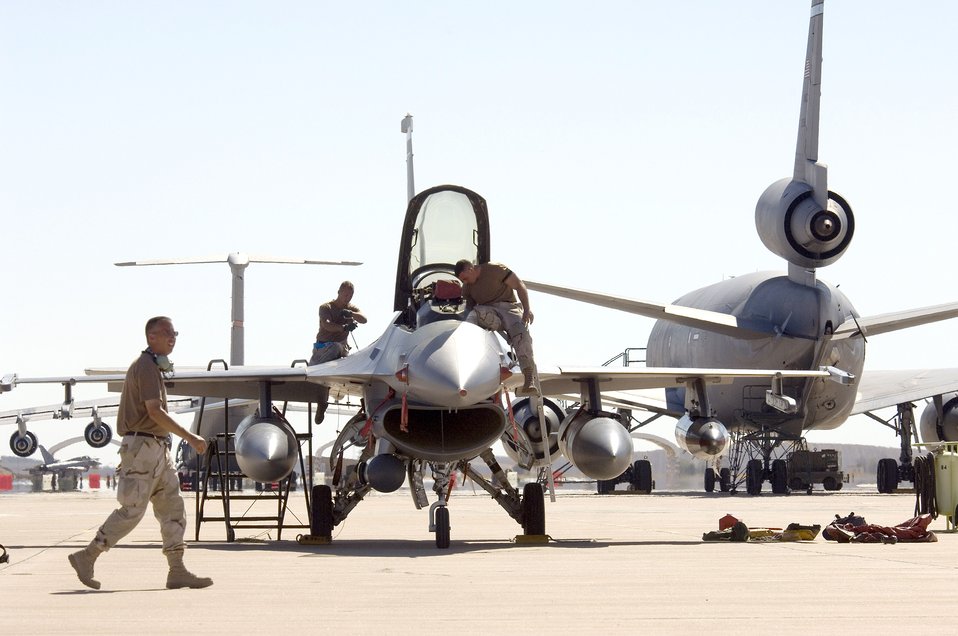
'Coronet East' flies home

MORON AIR BASE, Spain -- An F-16 Fighting Falcon is serviced on the flightline here after